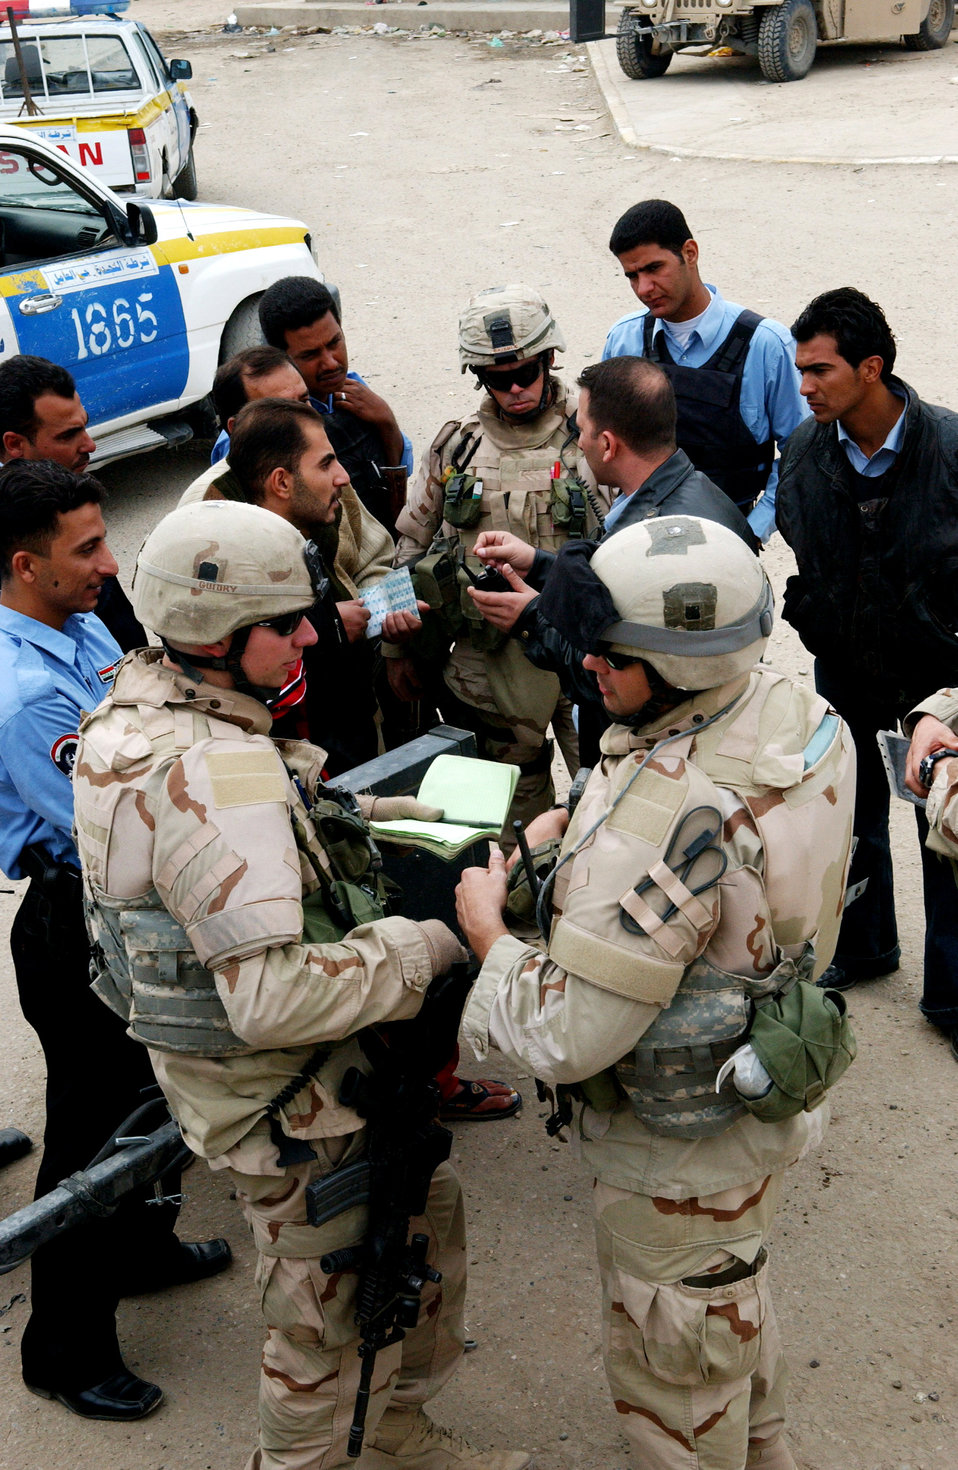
Street patrol

Detachment 7, 732nd Expeditionary Security Forces Squadron Airmen speak with Iraqi policemen Nov. 23 in the Hy Al-Amil district of Baghdad. The squadron's mission is to deploy into the city Baghdad assisting Iraqi police in achieving self-sufficiency.